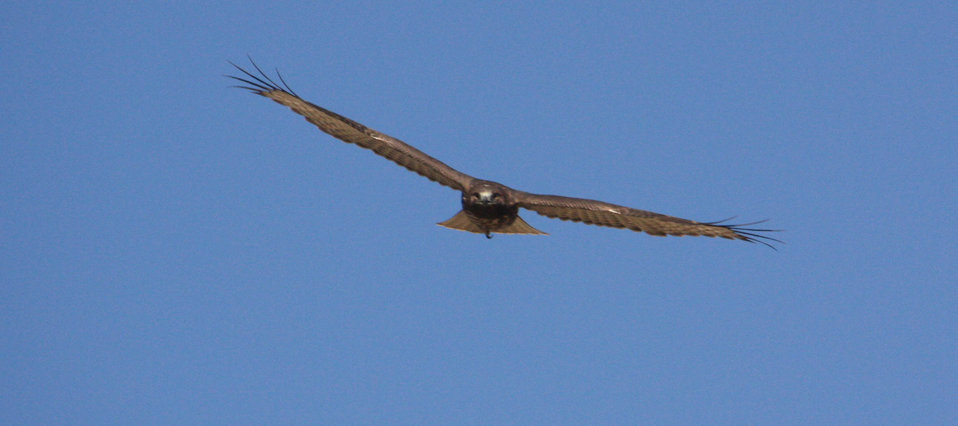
Comin' at Ya!

A Red-Tailed Hawk flies straight ahead for an exciting shot in flight. The birds are amazingly adapted for life in the air.

Credit: USFWS / Ann Hough, National Elk Refuge volunteer